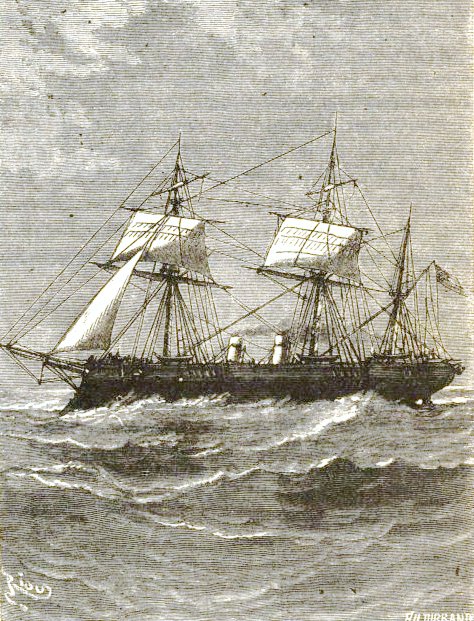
20000 Abraham Lincoln